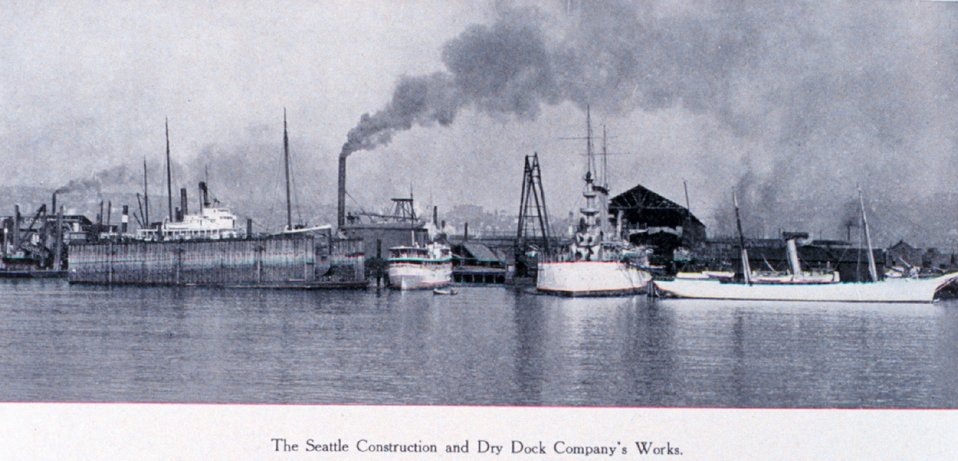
'The Seattle Construction and Dry Dock Company's Works'. In: 'Puget Sound and Western Washington Cities-Towns Scenery', by Robert A. Reid, Robert A. Reid Publisher, Seattle, 1912. P. 72.